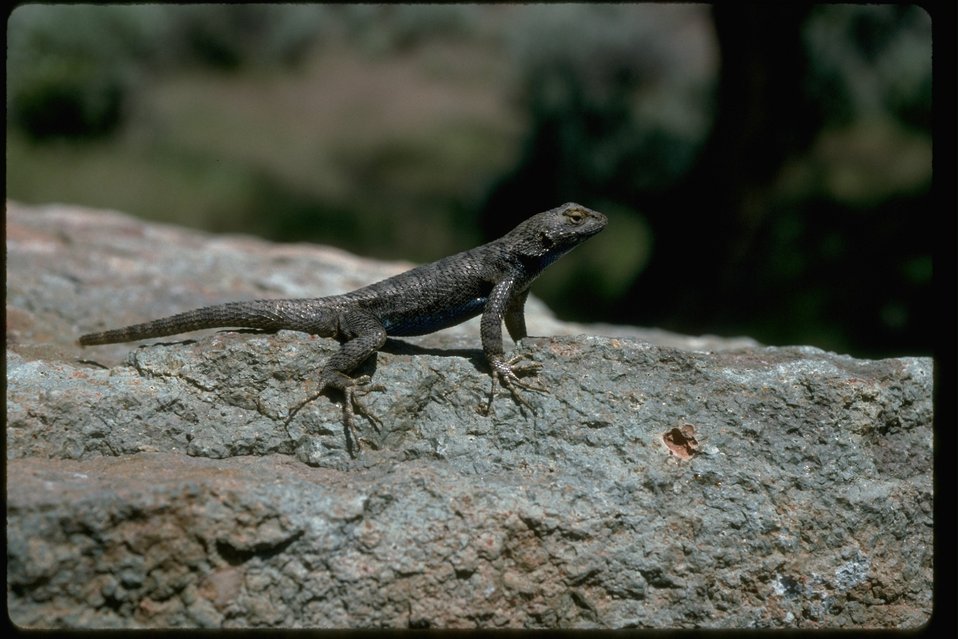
Western Feuce Lizard, Paeblo Mountains in Southeastern Oregon.